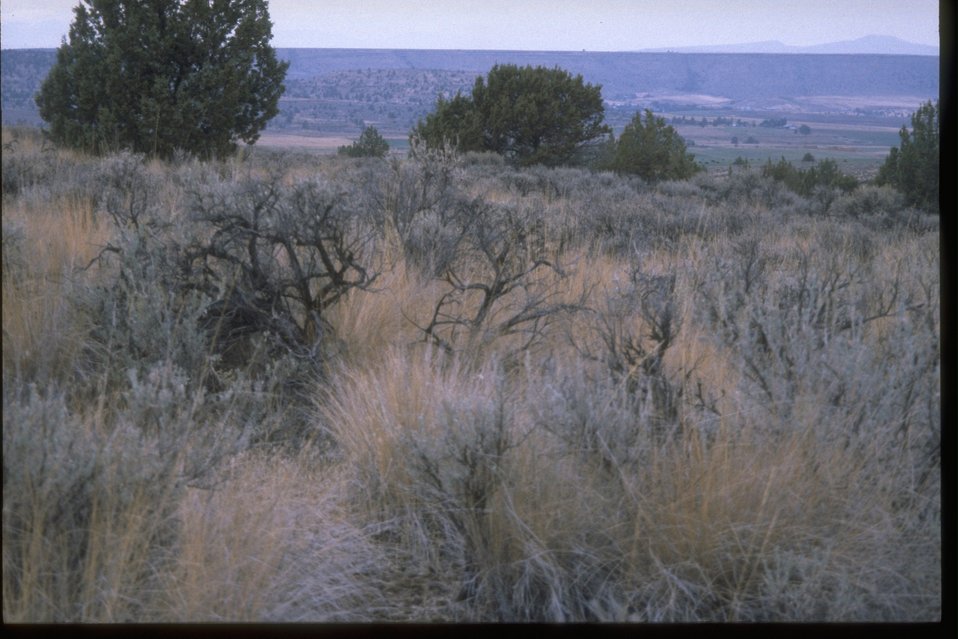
Shrub/grass steppe in excellent condition. Central Oregon.